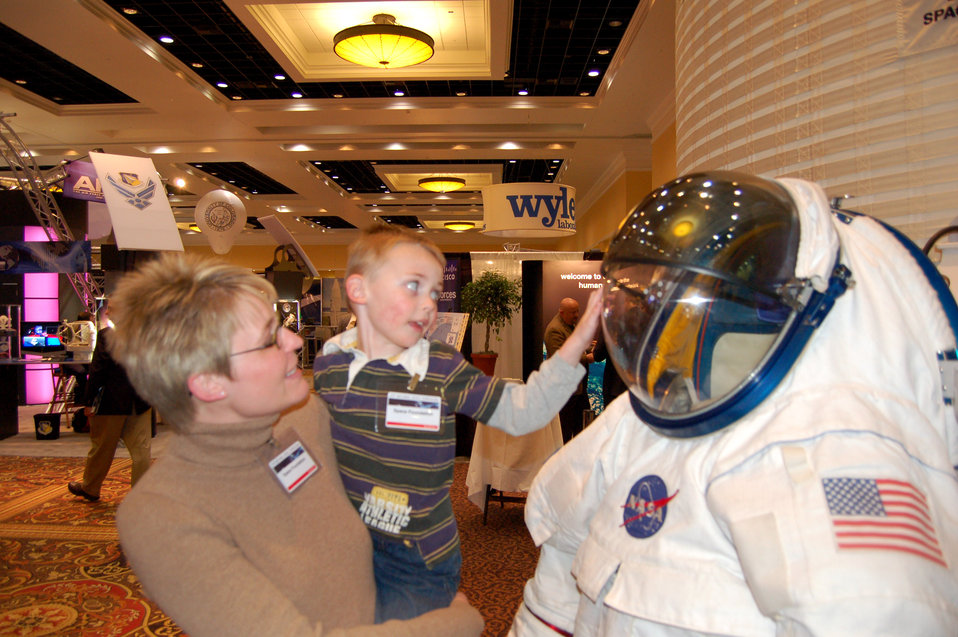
PACAF commander stresses importance of space

Miranda Sherman lifts up her son Reid, so he can get a closer look at a display, during the 23rd National Space Symposium April 12 at the Broadmoor in Colorado Springs, Colo. In addition to the exhibits, there were numerous guest speakers at the event.